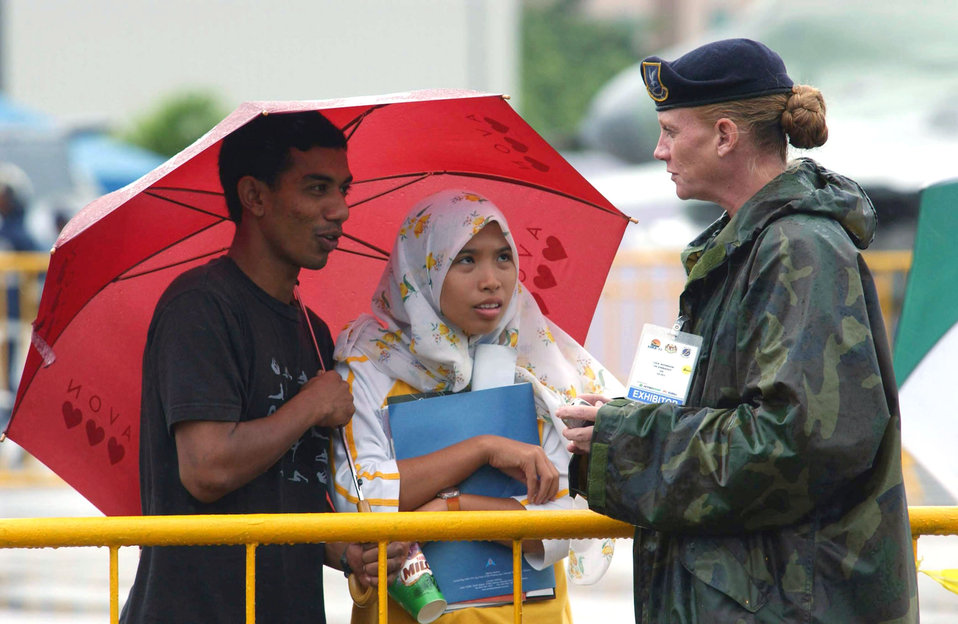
LIMA 03

LANGKAWI, Malaysia -- Tech. Sgt. Lisa Johnson chats with Malaysians at the flightline during the Langkawi International Maritime and Aerospace 2003 exhibition here. She is from the 613th Security Forces Squadron at Andersen Air Force Base, Guam. LIMA is one of the premier defense trade shows in the world and this year featured defense-related technology from more than 800 companies in some 40 nations.